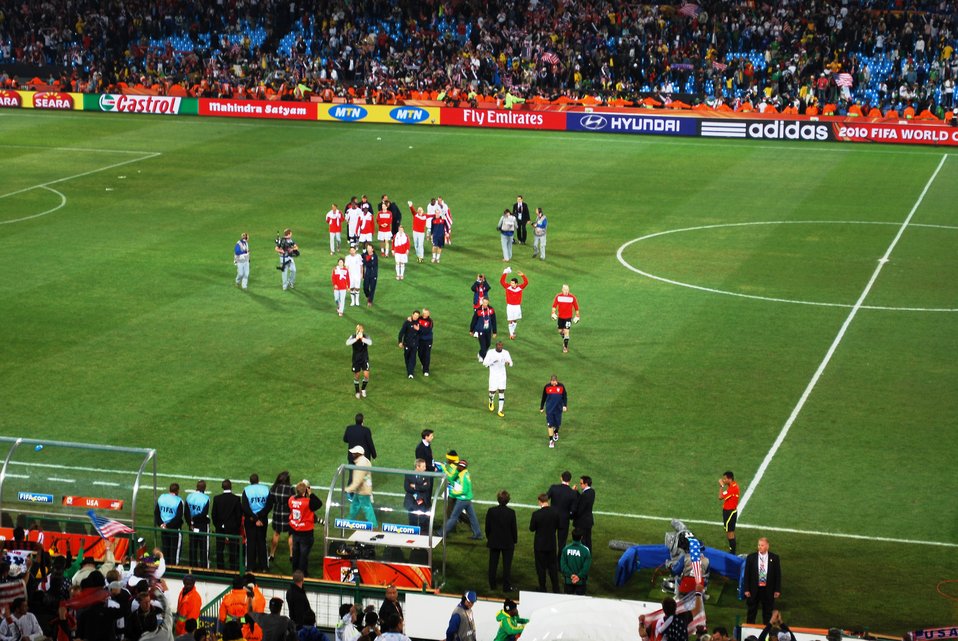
U.S. Men’s National Team Walks Off Field After Defeating Algeria

A jubilant U.S. Men’s National Team walks off the field after defeating Algeria 1-0 in a World Cup match at Loftus Versfeld Stadium in Pretoria, South Africa, on June 23, 2010.